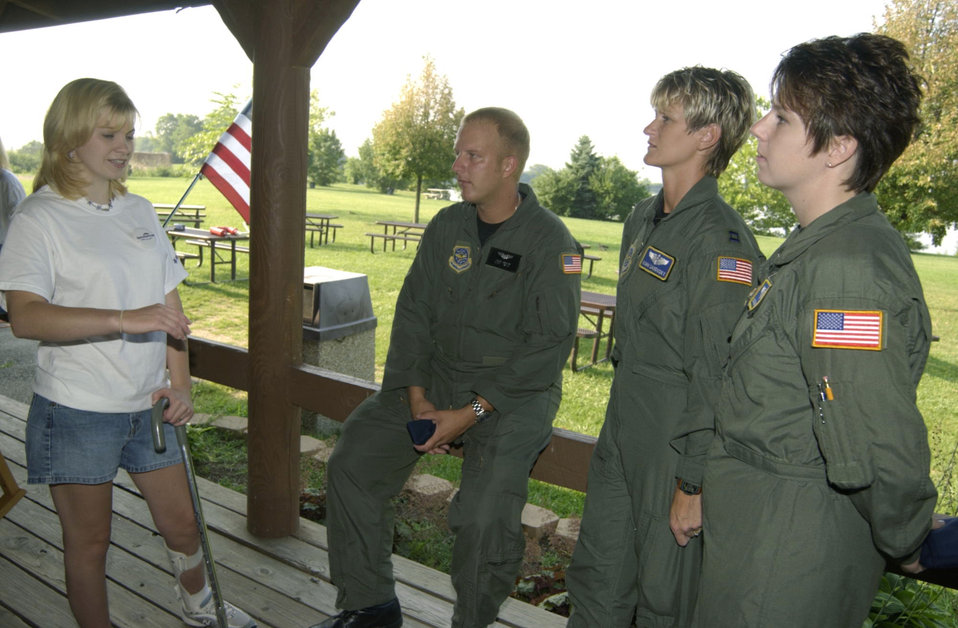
Lynch talks with Airmen

WRIGHT-PATTERSON AIR FORCE BASE, Ohio -- Jessica Lynch, a former Army prisoner of war, speaks with Airmen from the 445th Airlift Wing here Aug. 3. Tech. Sgt. Hans Jagow, Capt. Kimm Sandusky and Staff Sgt. Sandi Golden-Vest helped transport Ms. Lynch back to the United States in April 2003. This meeting was the first time they had met face-to-face.